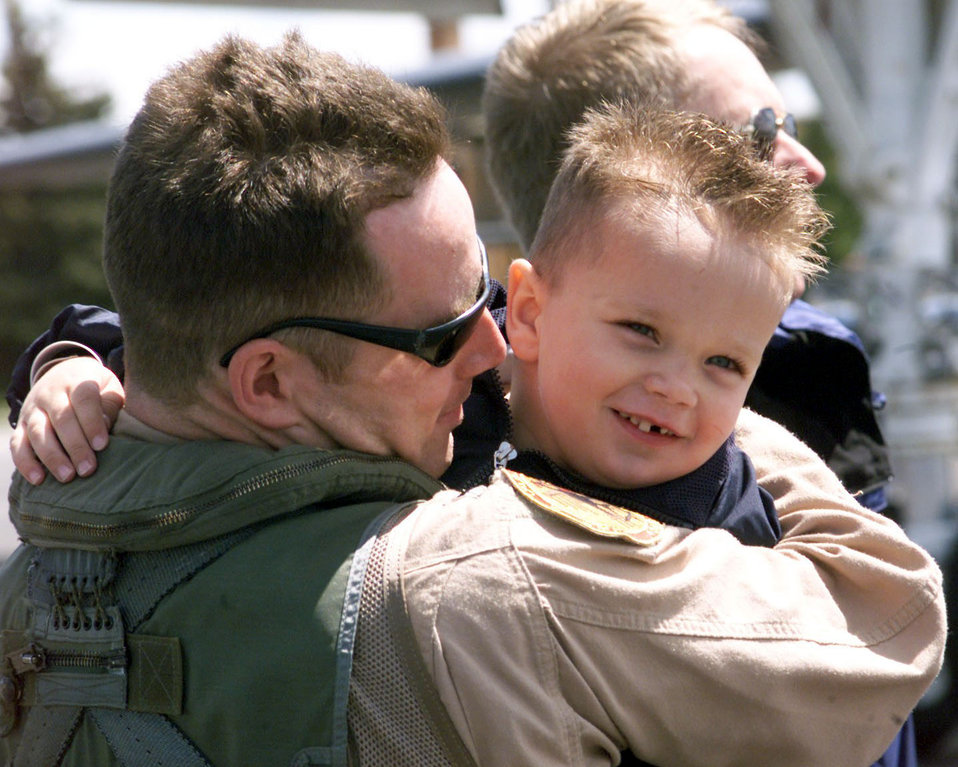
Hi Diedrich

ELLSWORTH AIR FORCE BASE, S.D. -- Capt. Steve Gerken, 34th Bomb Squadron aircraft commander, and his 3-year-old son, Diedrich, embrace May 13. Six B-1 Lancers and their crews return to a crowd of family and friends welcoming them home here. As of May 8, B-1s flew 497 combat sorties supporting operations Enduring Freedom and Iraqi Freedom and dropped 4.56 million pounds of munitions.